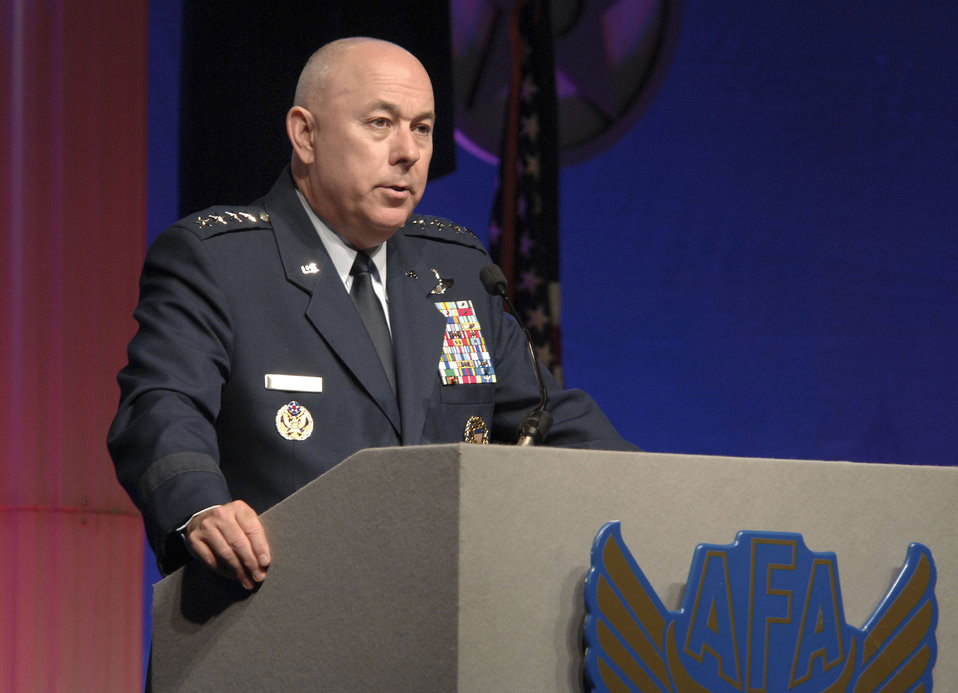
Air Force undertaking transformation initiatives

Air Force Chief of Staff General T. Michael Moseley explains how the Air Force has undertaken new initiatives to continue providing air power to the joint fight during the Air Force Association's Air & Space Conference and Technology Exposition here on Sept 26. The conference, which ran for three days in Washington D.C., featured General Moseley, Secretary of the Air Force Michael W. Wynne, and other key Air Force leaders.